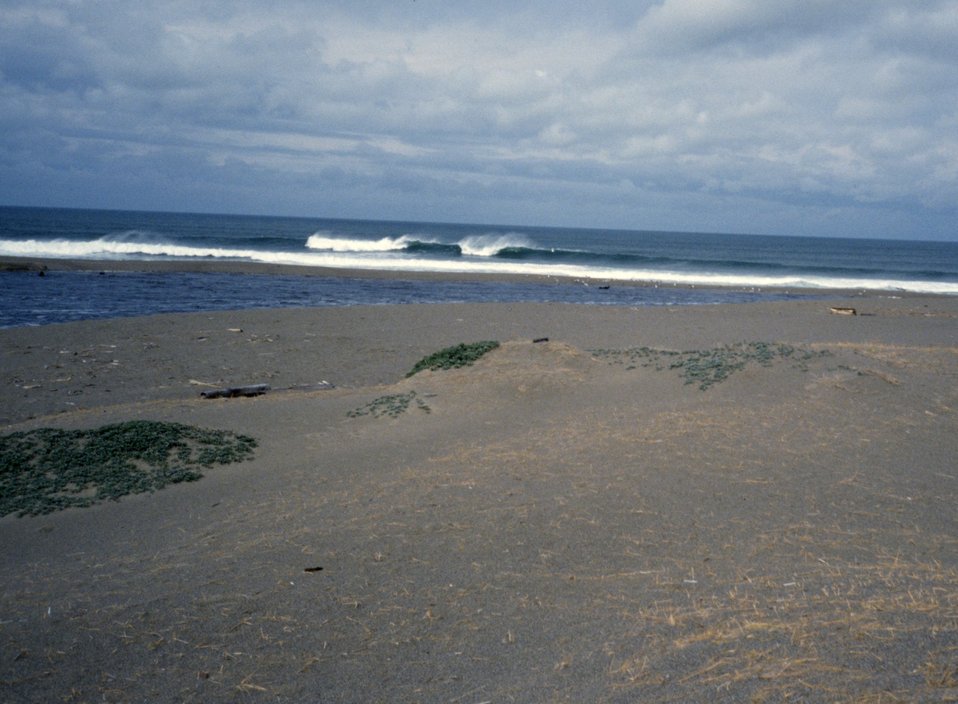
Point Reyes Great Beach